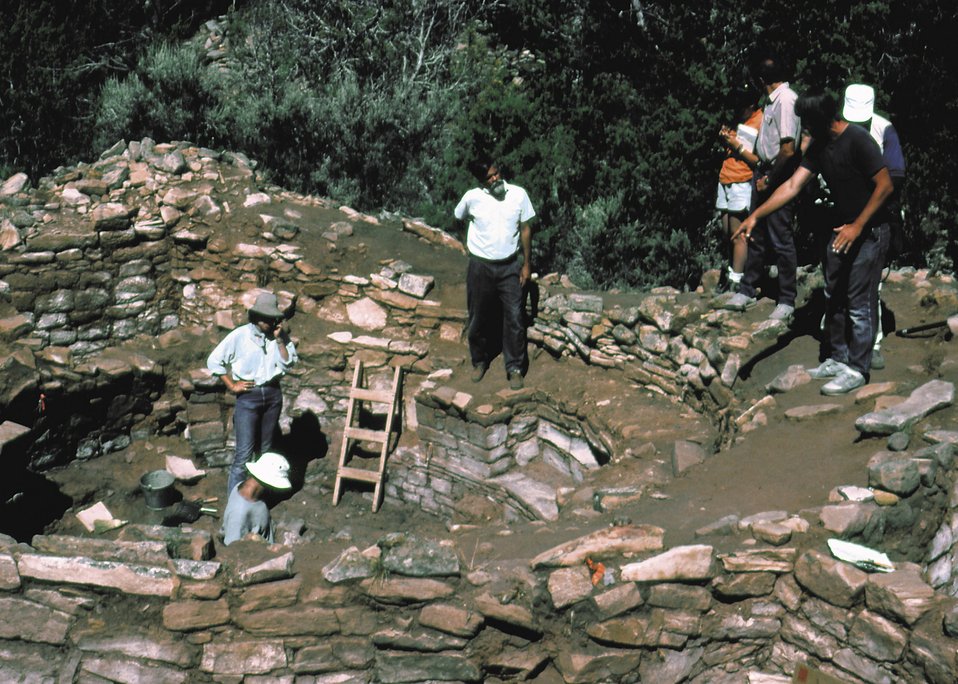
Arch. Dig